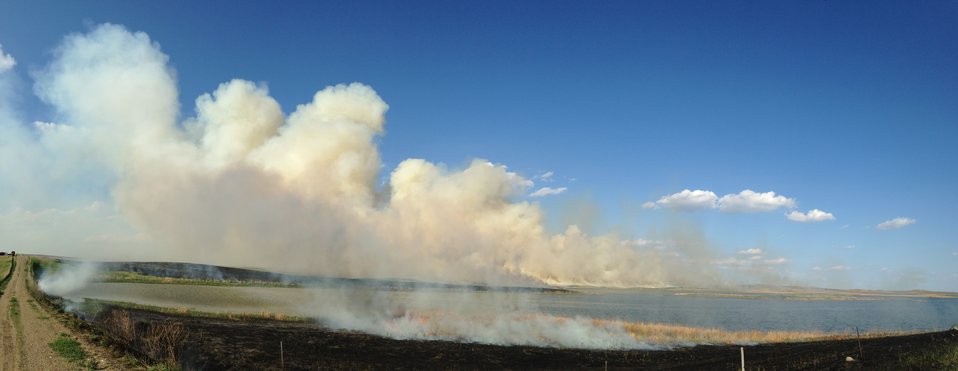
Knecht WPA Prescribed Fire

Prescribed fire is a management tool that is used to maintain the vigor of a prairie. As with grazing, native prairie plants adapted to the frequent fires that raged across the Great Plains. These fires were historically started by lightning strikes and burned many miles of uninterrupted prairie. Fire is one of the best management tools for weakening non-native species. It removes the accumulated litter layer, stimulates new plant growth, and can be used to prepare ground for restoration.